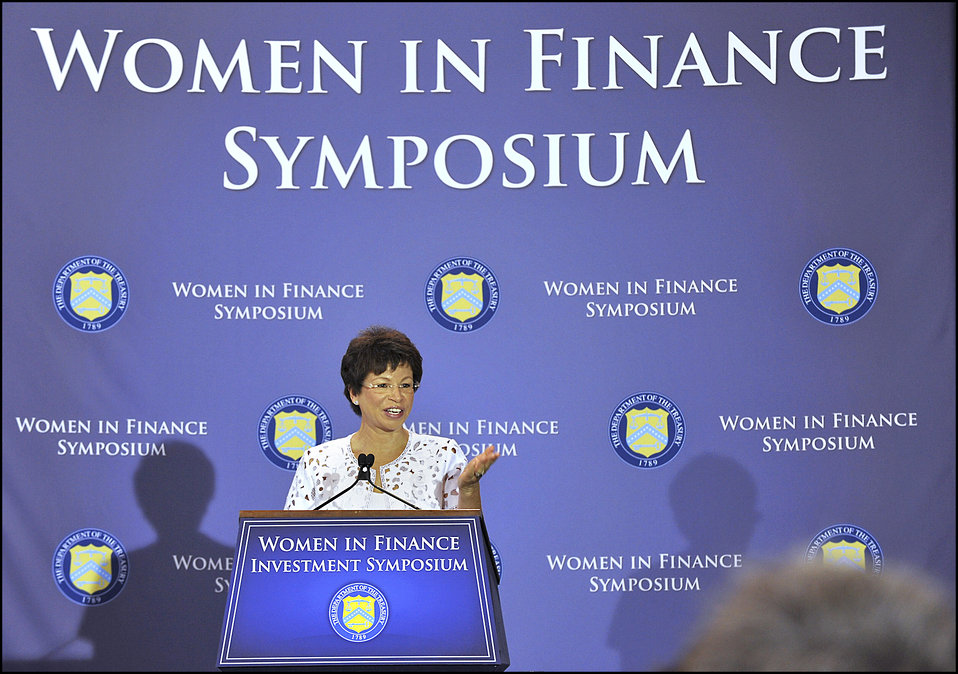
Women in Finance Investment Symposium

For the second year, Senior Advisor and Assistant to the President Valerie Jarrett addressed the Women in Finance Symposium.